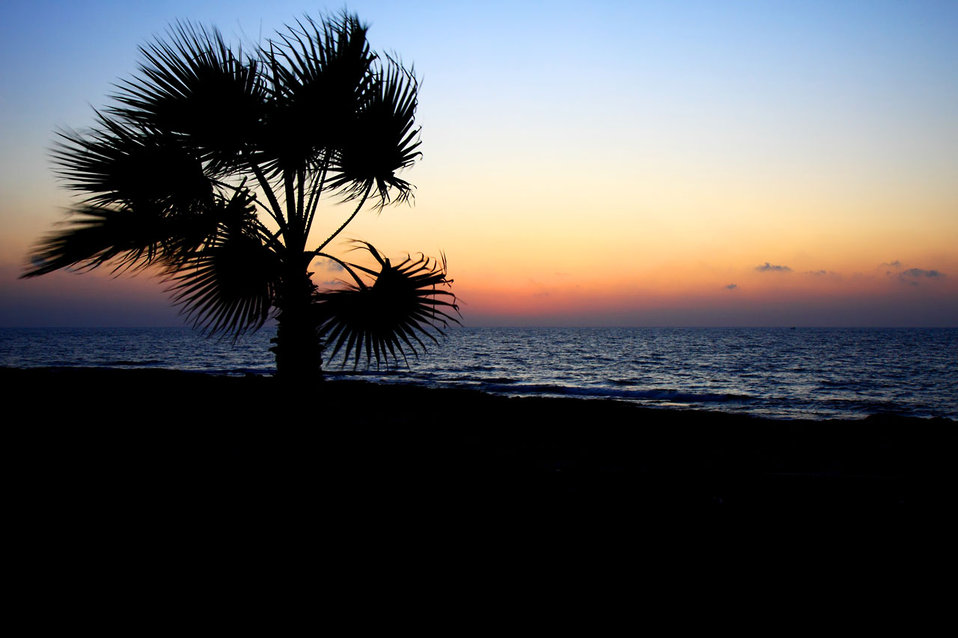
Palm tree and sea at sunset

Palm tree at sunset right after sun went down.